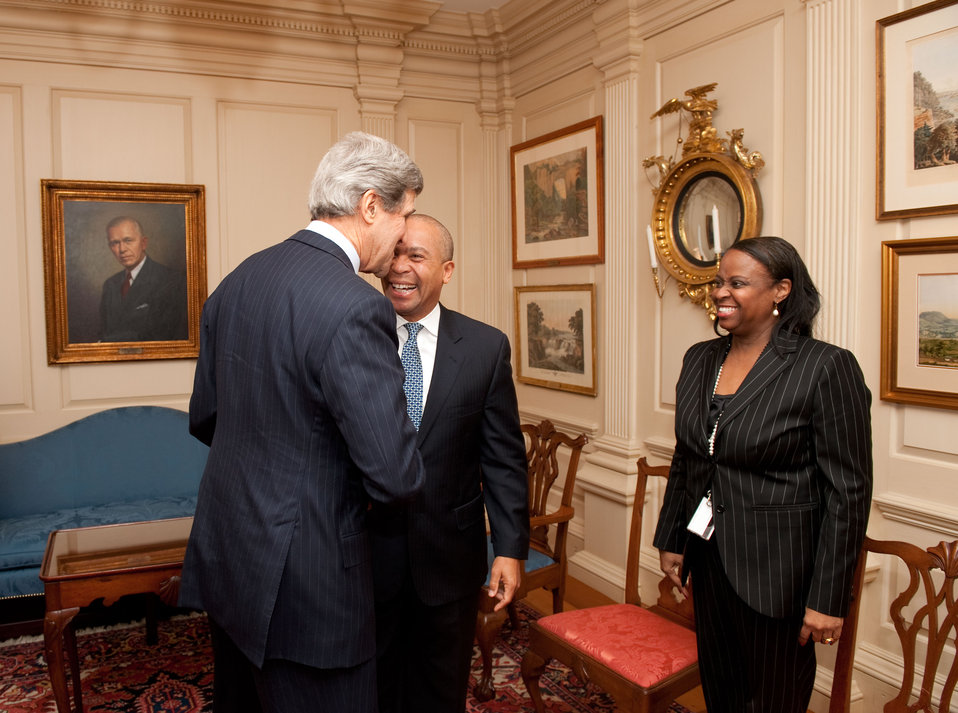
Secretary Kerry Meets With Massachusetts Governor Patrick

U.S. Secretary of State John Kerry meets with Massachusetts Gov. Deval L. Patrick at the U.S. Department of State in Washington, D.C., February 7, 2013.